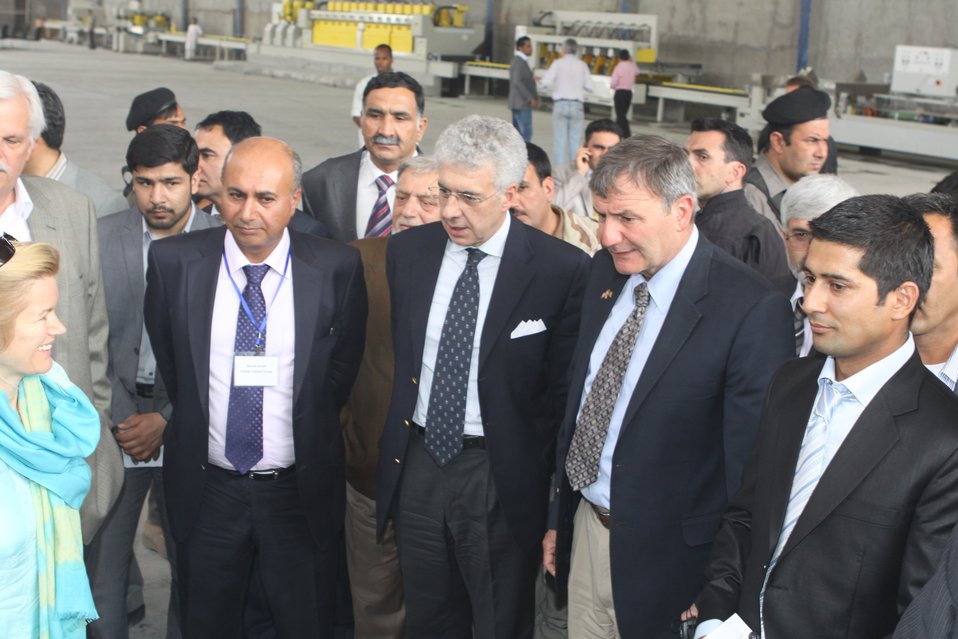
100525 Hirat Marble Conference 479